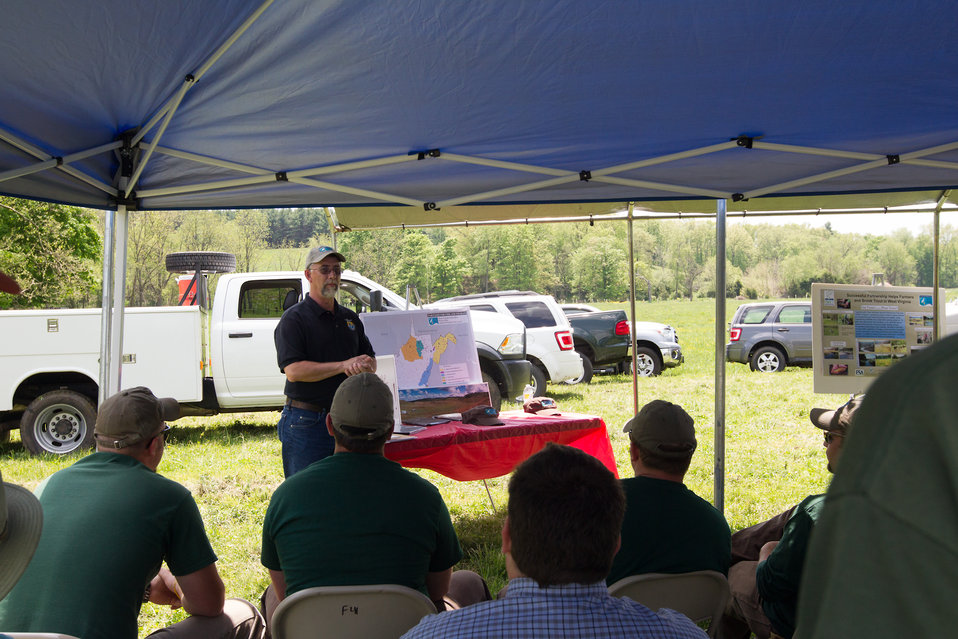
Celebrating 1 Million Feet of Conservation Fence in WV

Partners for Fish and Wildlife Program